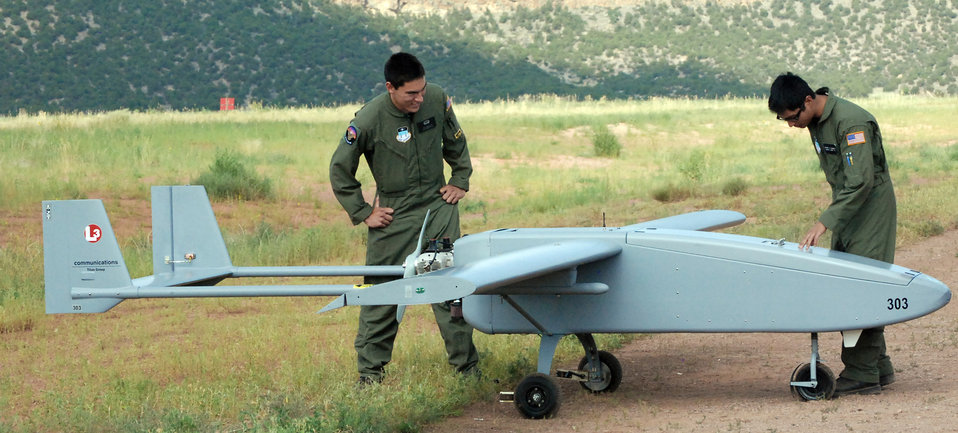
Inaugural Academy UAS class pins on wings

U.S. Air Force Academy Cadets 2nd Class Jeffrey Nakayama and Rupert Domingo inspect a Viking 300 unmanned aircraft vehicle before launch from Camp Red Devil July 20 at Fort Carson, Colo. The Academy's new UAS training is designed to encourage cadets to serve as UAS leaders after graduation. The Viking 300 weighs between 200 and 300 pounds and has a top speed of 100 knots, with a cruising speed of 55 knots.